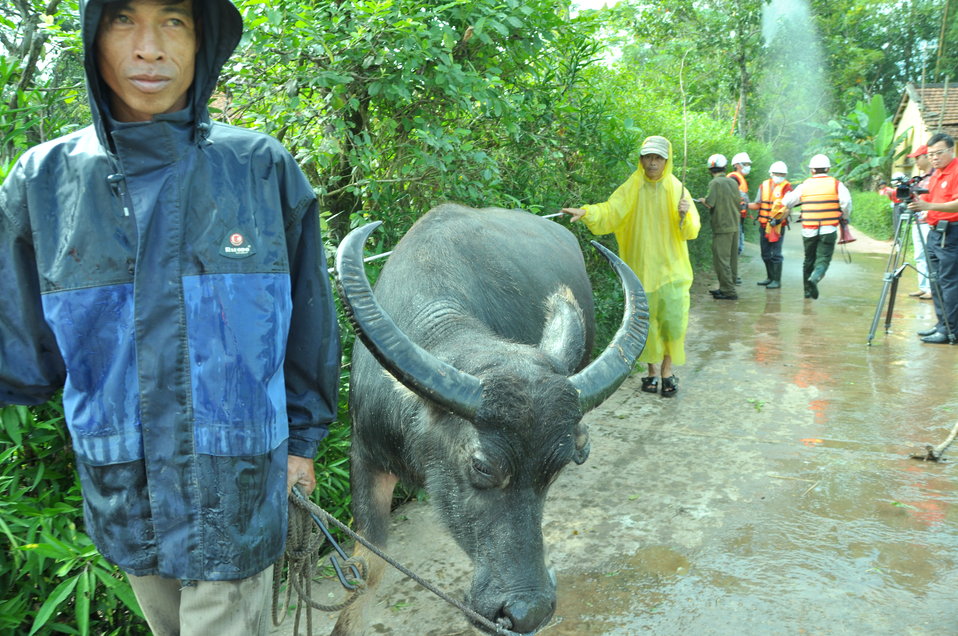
USAID, Red Cross Support Disaster Response Drill in Duy Hoa Commune, Quang Nam Province

Duy Hoa Commune, Quang Nam Province
December 5, 2012